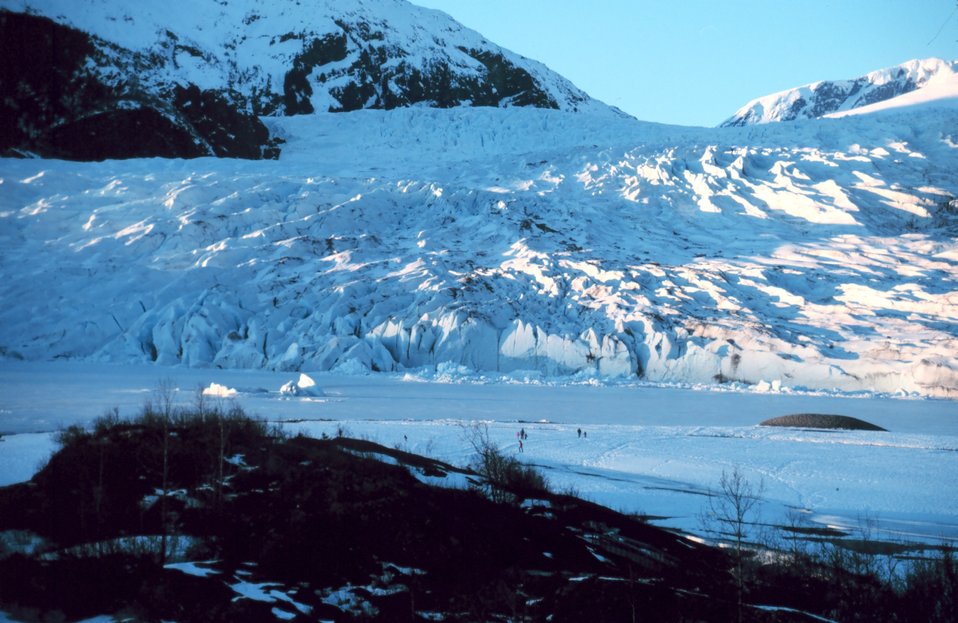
Mendenhall Glacier